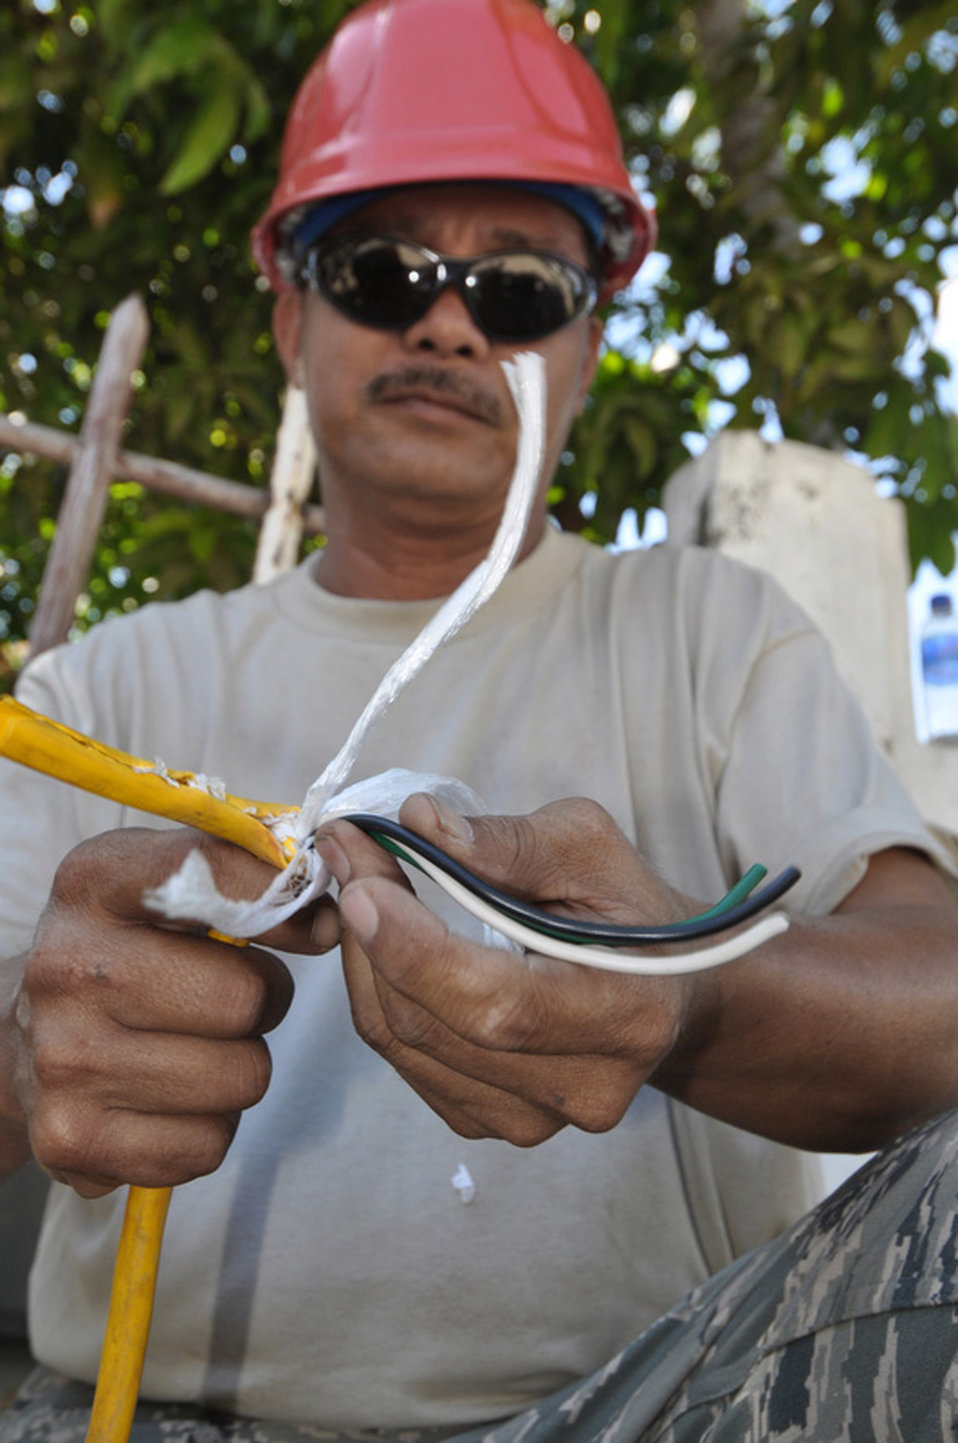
Guam Guard members leave mark in Dili

Master Sgt. Mark McAuslem splices a wire so he can divert power to a different area inside the national hospital July 16 in Dili, Timor Leste. Sergeant McAuslem is a member of the Guam Air National Guard's 254th RED HORSE Squadron at Andersen Air Force Base, Guam. The squadron was in Timor Leste as part of Pacific Angel 2009, a Pacific Air Forces humanitarian assistance operation.